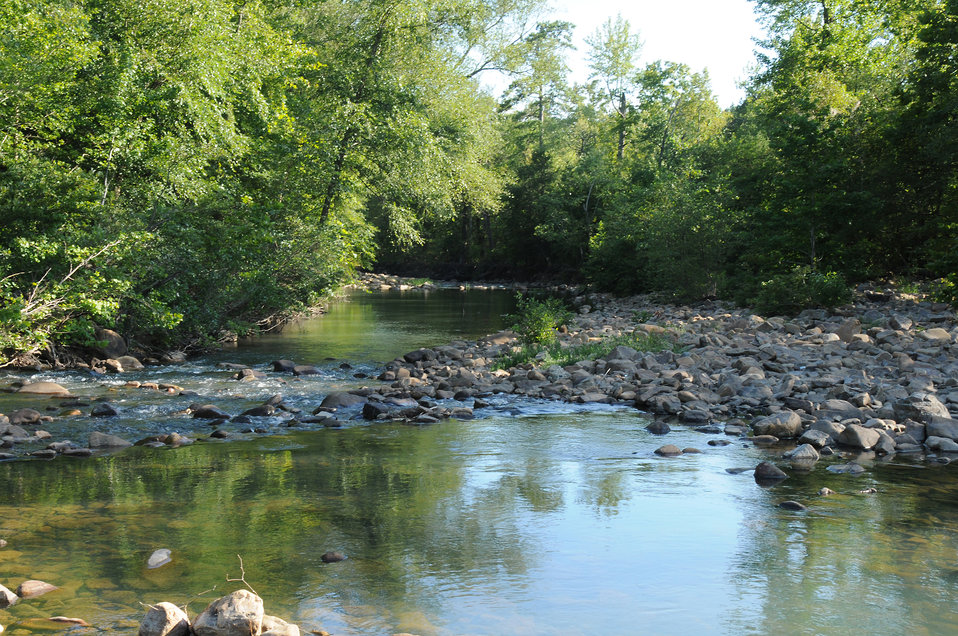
A river runs through the Ouachita National Forest in McCurtain County, Oklahoma on August 11, 2009.